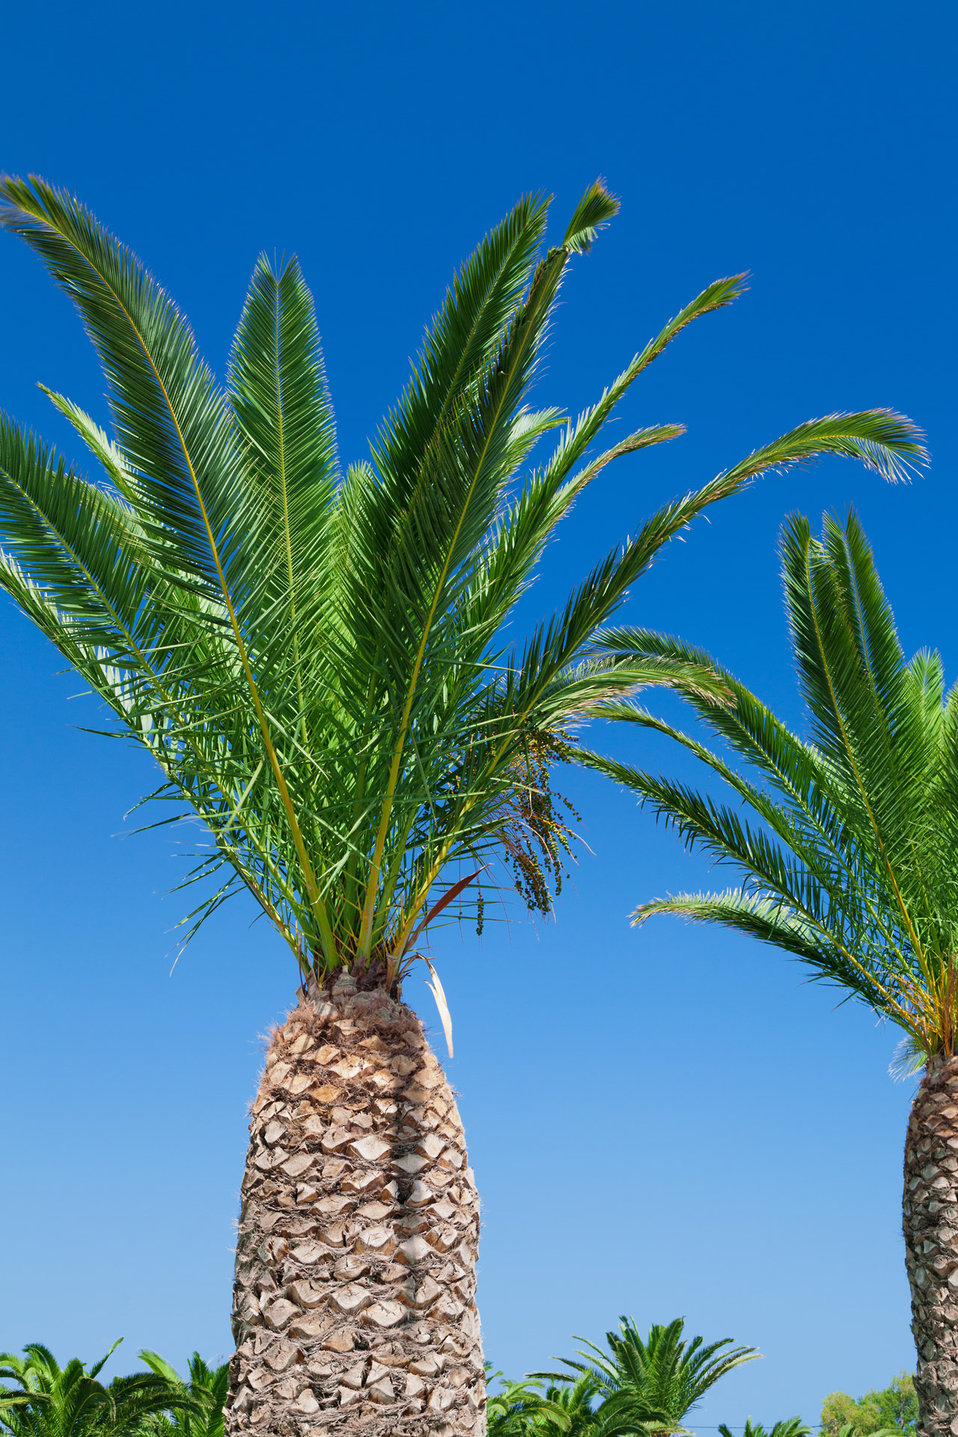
Palm trees with a clear blue sky.